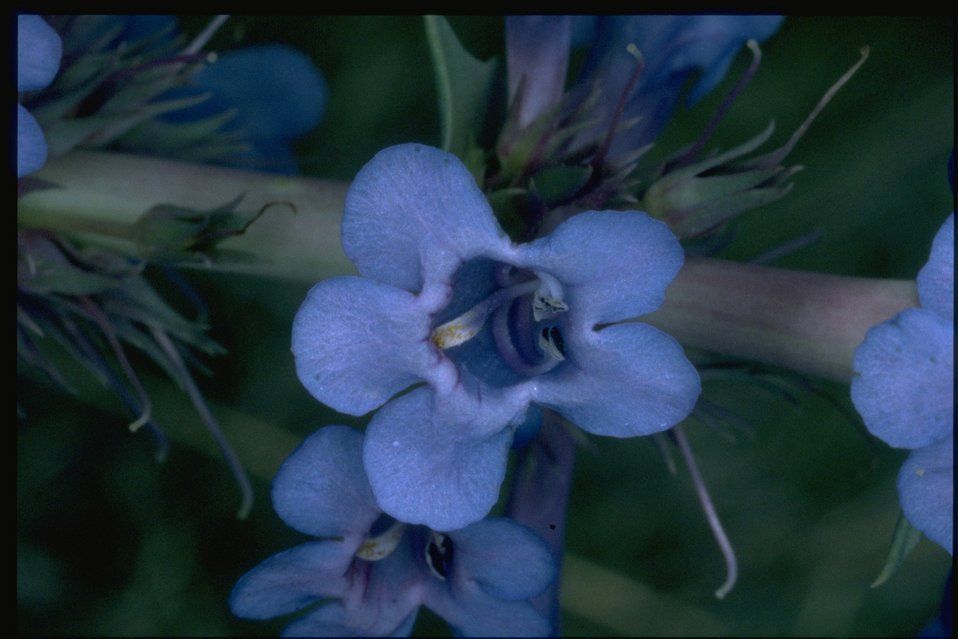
Closeup shot of Sand Penstemon (Penstemon acuminatus).